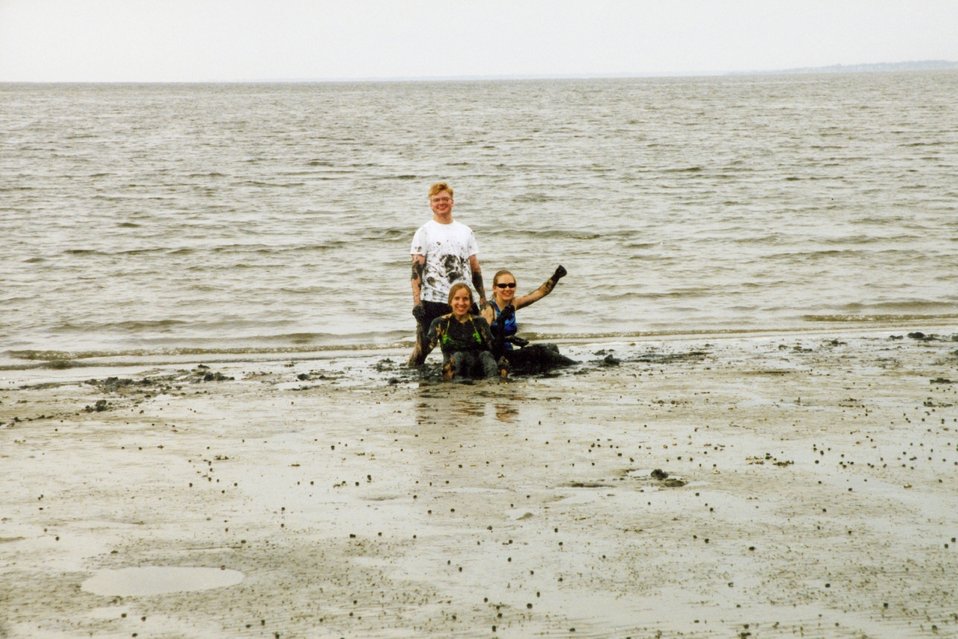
Mud bottom, as opposed to sand bottom, characterizes much of the near shore area on the sounds and tidal creeks of Georgia's Golden Isles.